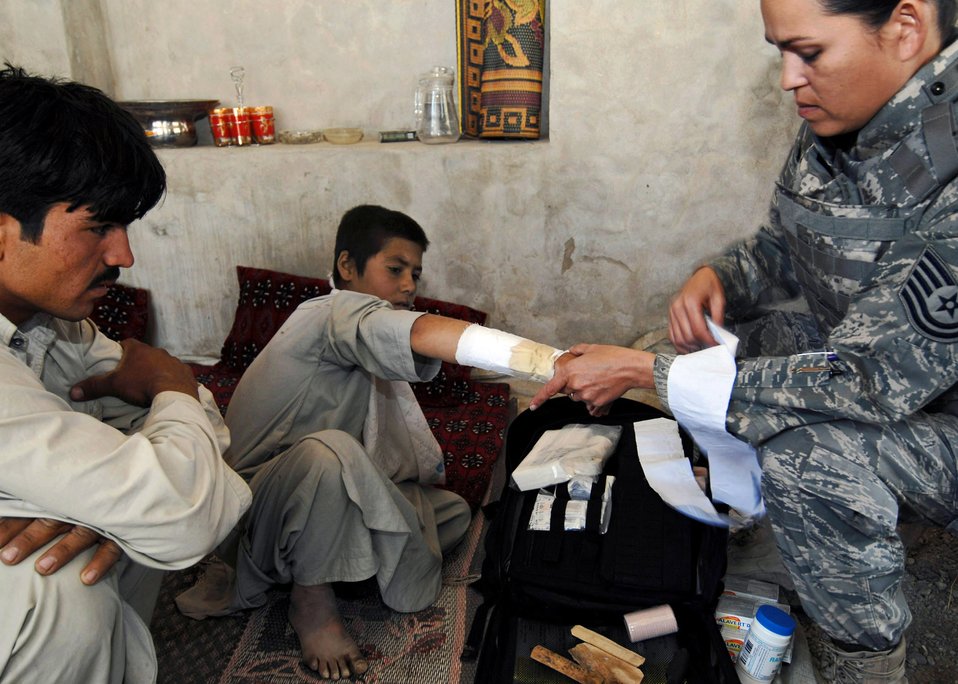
This won't hurt...

Tech. Sgt. Joy Flumerfelt removes a makeshift splint from a boy's broken arm. His arm was then evaluated and resplinted with better materials during a medical civil action project Oct. 4 outside of Bagram. Sergeant Flumerfelt is a medical technician with the 336th Expeditionary Fighter Squadron.